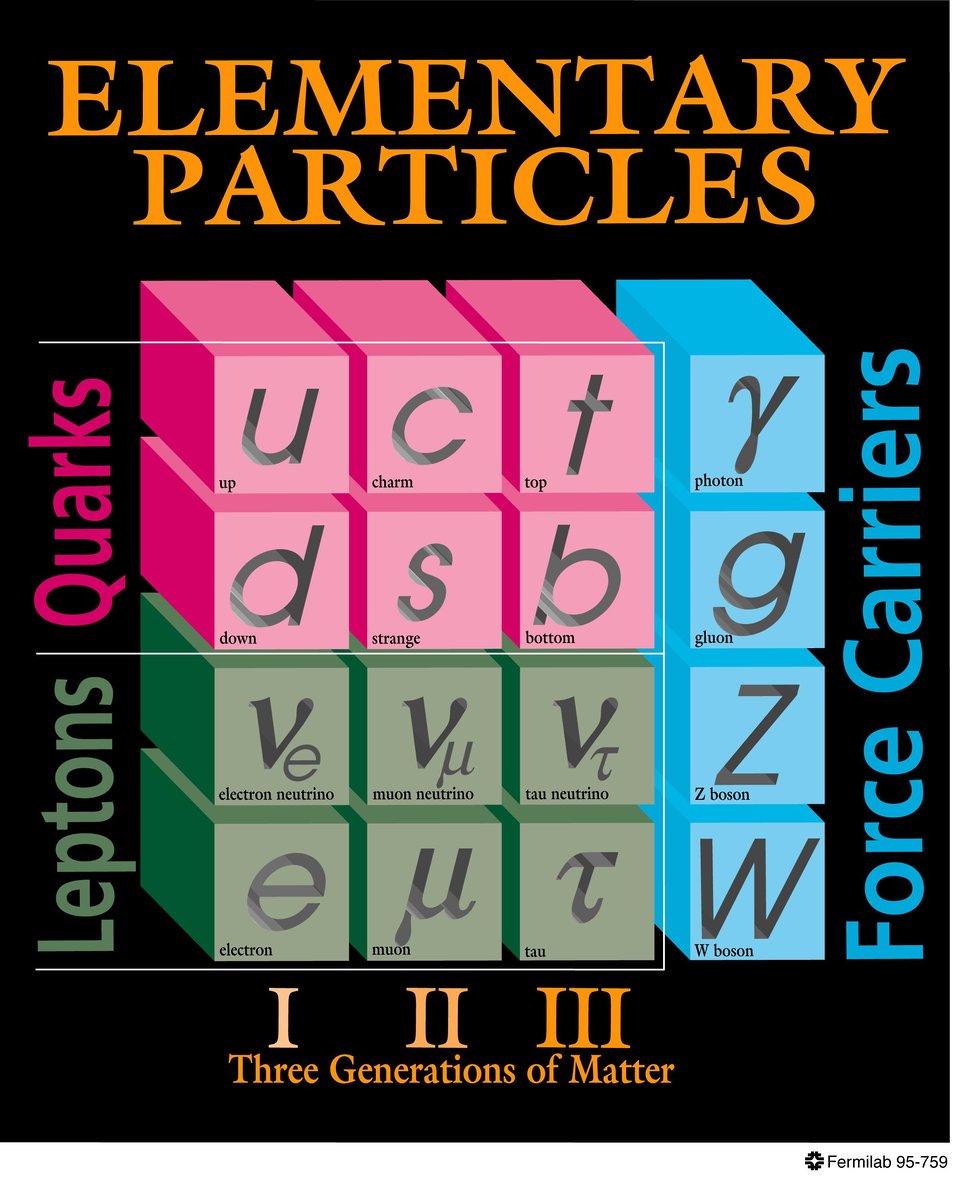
THE STANDARD MODEL OF ELEMENTARY PARTICLES.